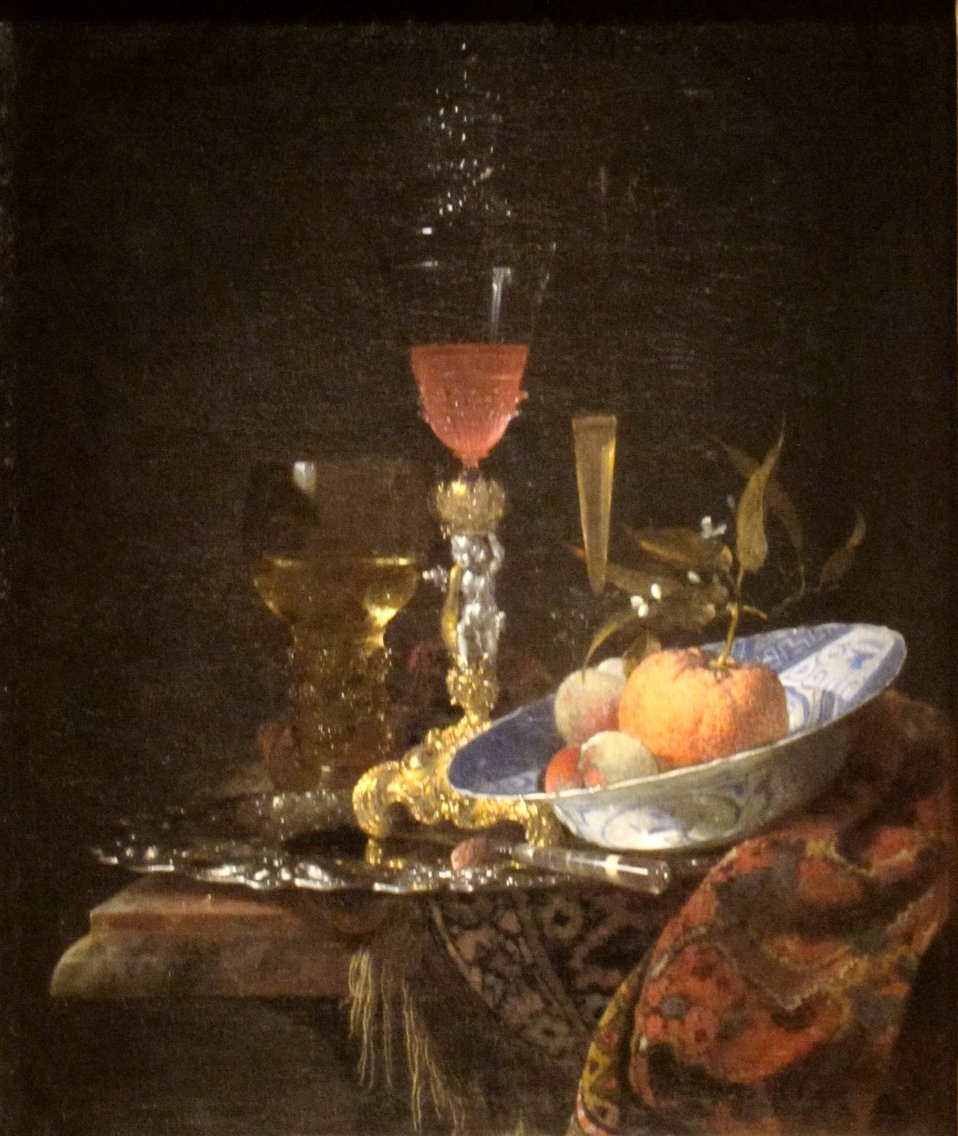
'Wineglass and a Bowl of Fruit', oil on canvas painting by Willem Kalf, 1663